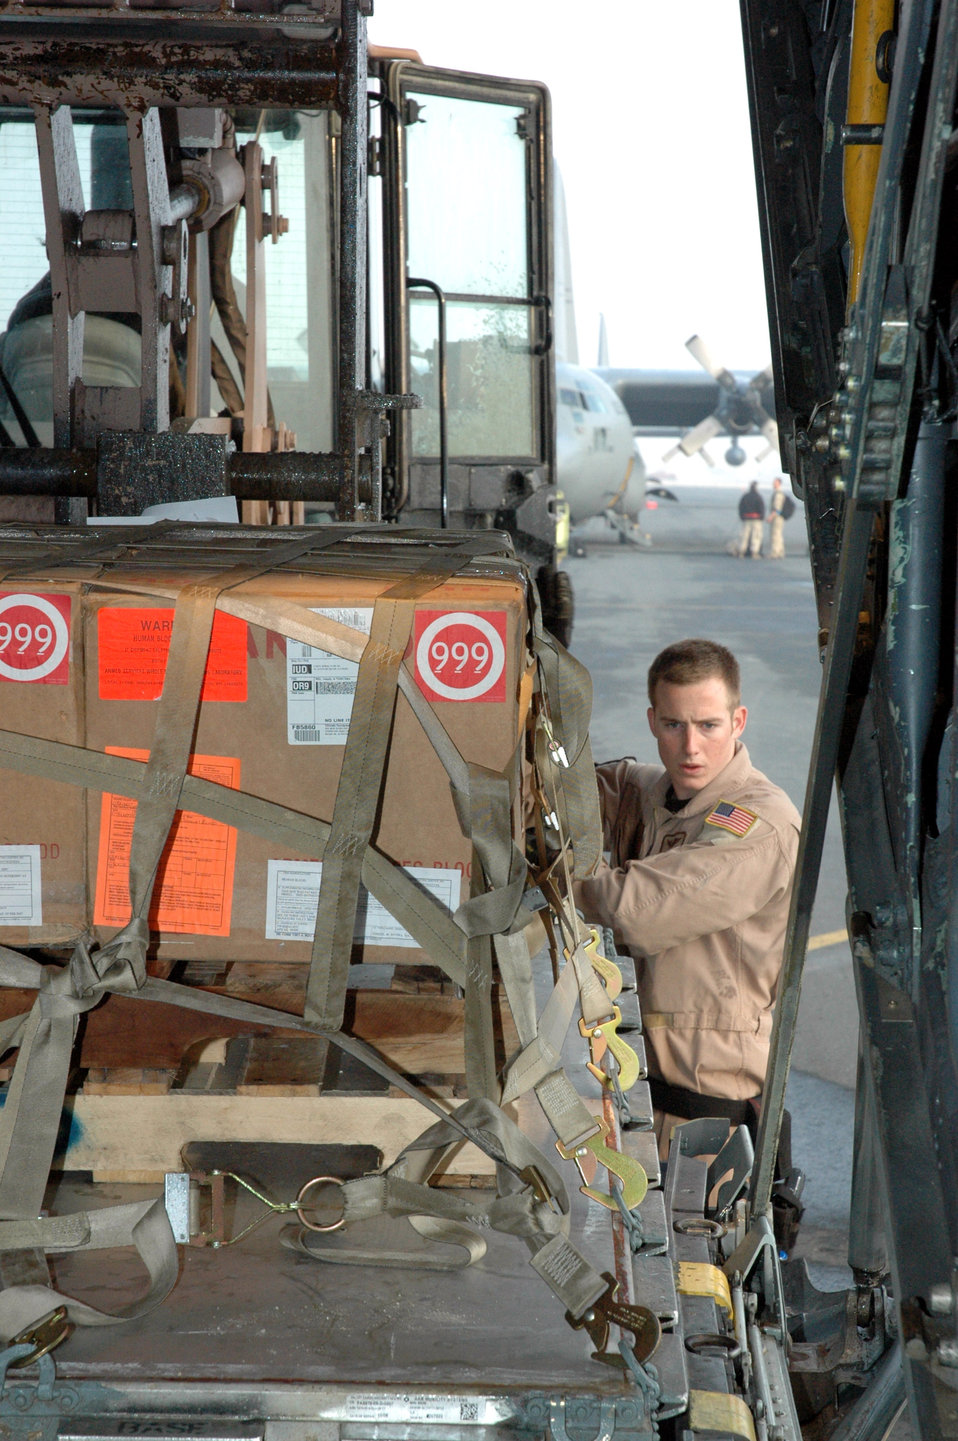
Loadmasters learn from mentors

Airman 1st Class Brian Mulkey marshals in palletized cargo onto a C-130 Hercules for a tactical airlift mission Feb. 8 in Southwest Asia. Airman Mulkey is a loadmaster assigned to the 746th Expeditionary Airlift Squadron.